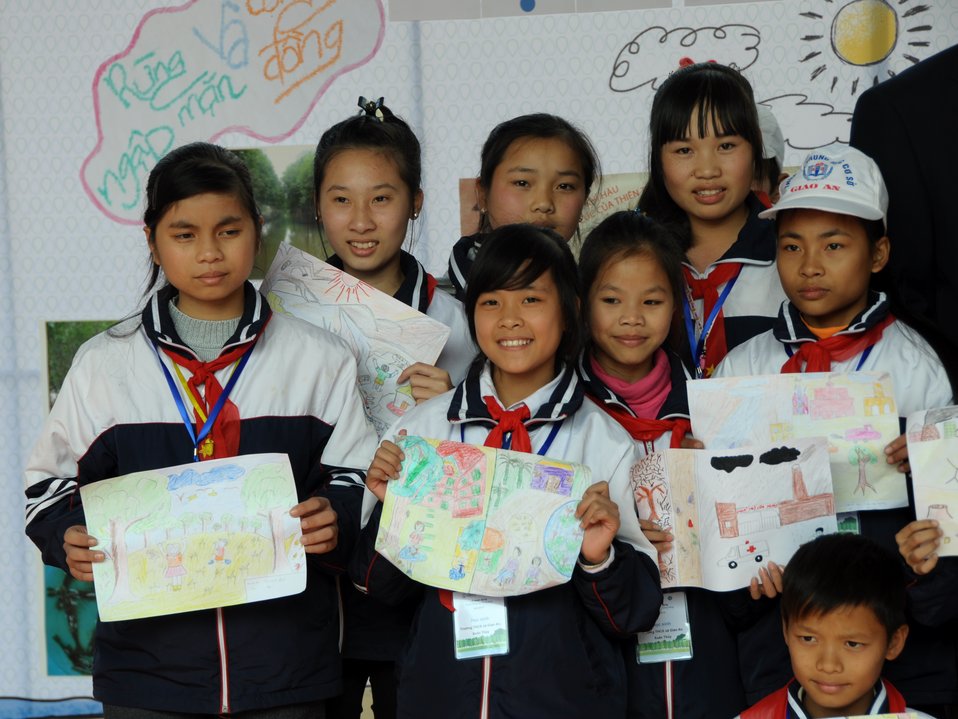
Nam Dinh school students draw paintings to raise awareness about climage change.

Quat Lam, Nam Dinh. January 16, 2014.